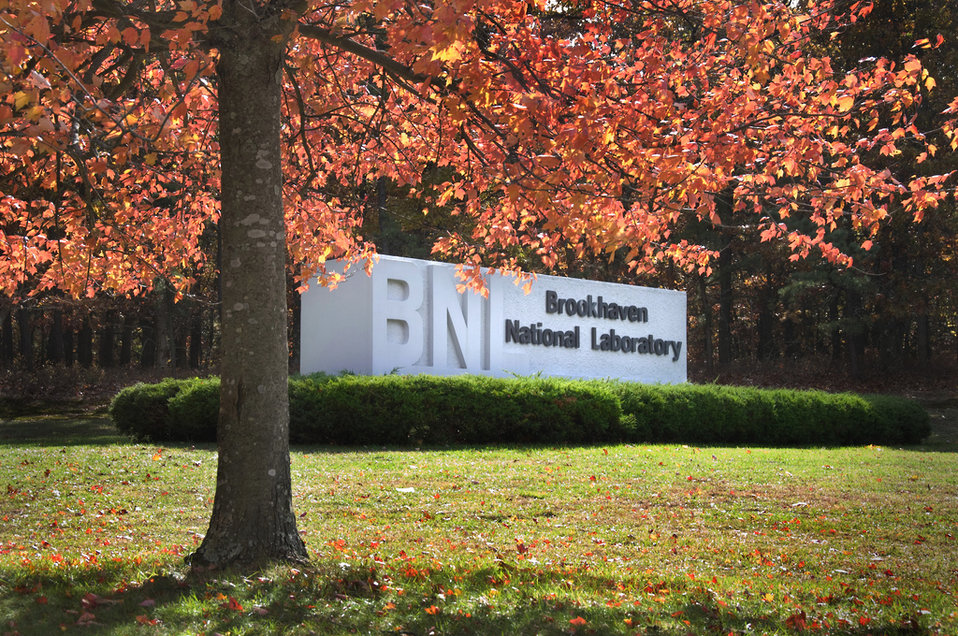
Sign at the Brookhaven National Laboratory.